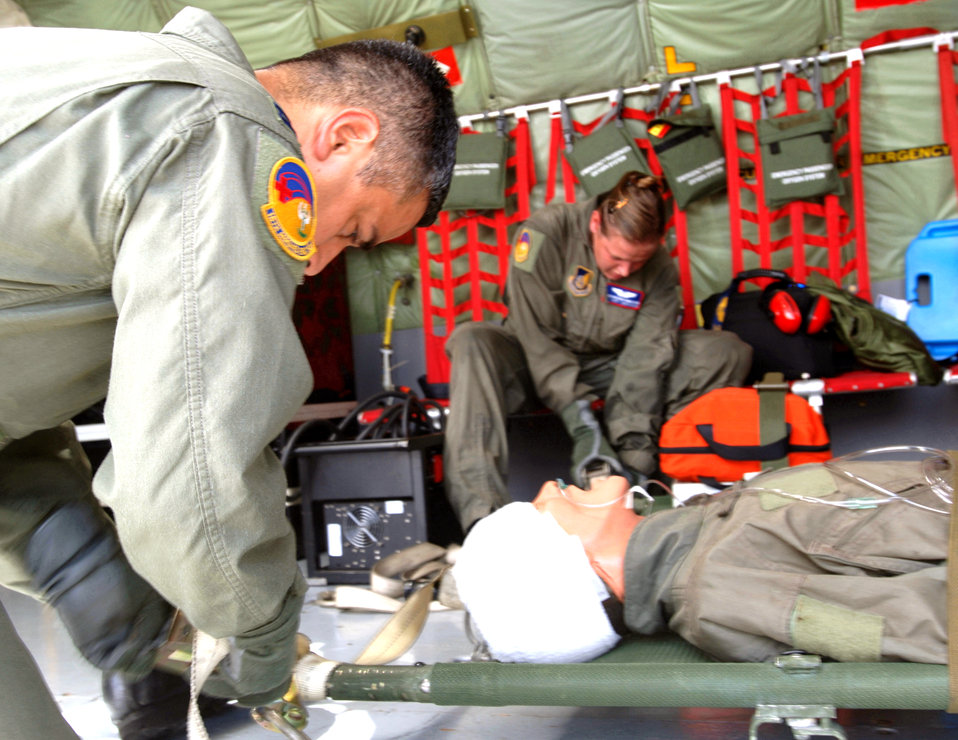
Kadena medics gain knowledge while deployed

KADENA AIR BASE, Japan -- Capt. Raul Rubio (foreground) and Tech. Sgt. Heather Robertson load a mannequin inside a KC-135 Stratotanker during a training mission here. The Airmen are practicing